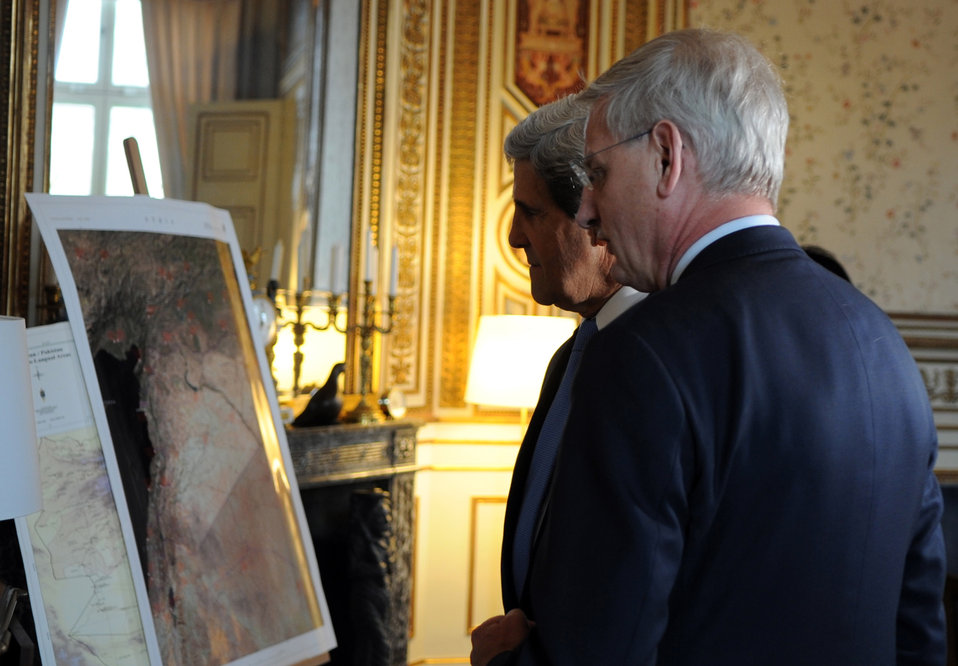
Secretary Kerry Meets With Swedish Foreign Minister Bildt

Swedish Foreign Minister Carl Bildt and U.S. Secretary of State John Kerry view maps of world hot spots during their meeting in Stockholm, Sweden, on May 14, 2013.